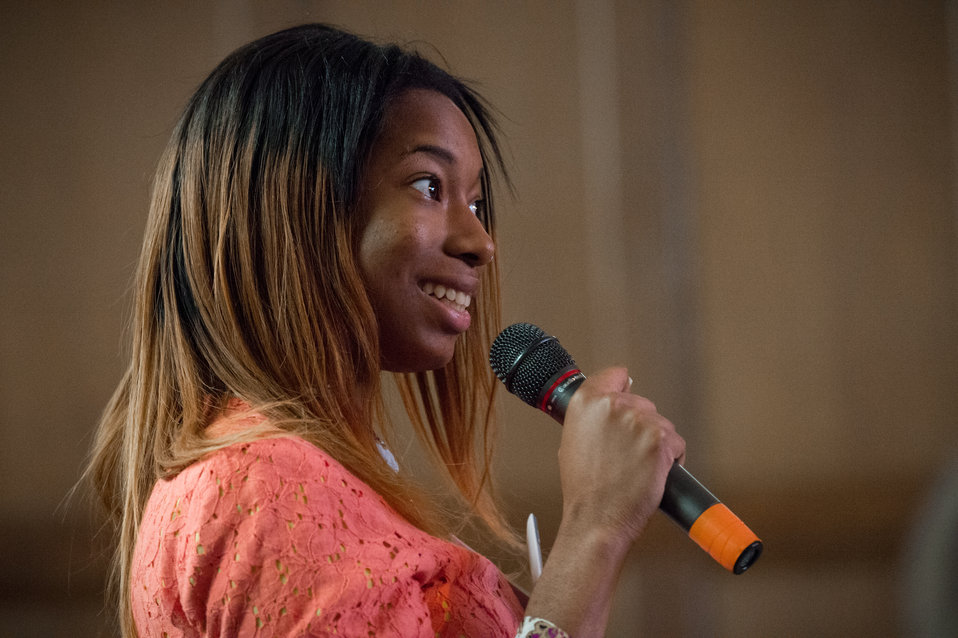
Students listen to the discussion panels at he Borlaug Symposium commemorating the late Dr. Norman Borlaug's 100th Birthday and vision, held in the Jefferson Auditorium of the U.S. Department of Agriculture (USDA) in Washington, D.C. on Tuesday, Mar. 25, 2014. The symposium highlights current efforts addressing global hunger. The symposium panels will feature high school and university students, as well as, scientists and policy advisors at Monsanto Chief Technology Officer Robb Farley talks about mobile communication and it's relationship to agriculture, at the Borlaug Symposium commemorating the late Dr. Norman E. Borlaug's 100th Birthday hosted by the U.S. Department of Agriculture (USDA) in the Jefferson Auditorium of USDA in Washington, D.C. on Tuesday, Mar. 25, 2014. The symposium will highlight current efforts addressing global hunger. The symposium panels will feature high school and university students, as well as, scientists and policy advisors at U.S. Agency for International Development (USAID), USDA and Non-Governmental Organizations (NGO). The symposium was planned in partnership with: U.S. Agency for International Development (USAID), Cornell University, Iowa State University, University of Minnesota, The Norman Borlaug Institute for International Agriculture, Texas A and M University, and the World Food Prize.